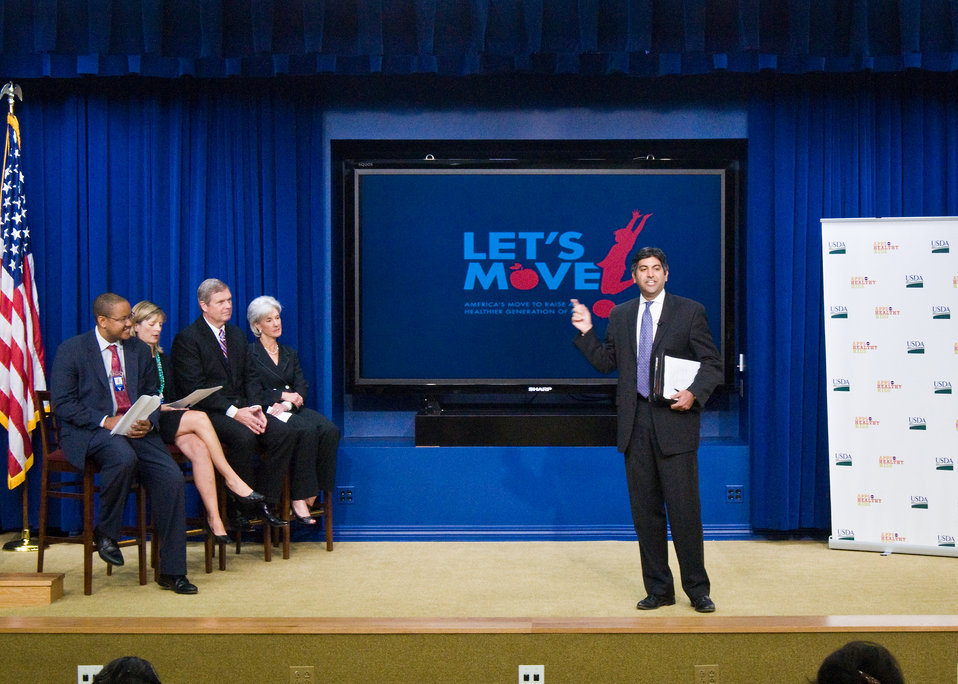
Agriculture Secretary Tom Vilsack and Health and Human Services Secretary Kathleen Sebelius listen as Aneesh Chopra, White House, Chief Technology Officer speaks of the importance of using information technology and social media to improve childhood nutrition as they honor the Winners of The Apps for Healthy Kids competition at the White House in Washington, DC, onWednesday, September 29, 2010. The Apps for Healthy Kids competition is part of First Lady Michelle Obama’s Let’s Move campaign to end childhood obesity within a generation. The competition challenges software developers, game designers, students and other innovators to develop fun and engaging software tools and games to urge children, especially “tweens” (children ages 9-12) – directly or through their parents – to eat better and be more physically active. The applications are software tools or games for the web, personal computer, mobile handheld device, console or any software platform available to the public. USDA Photo 10di1506-9 by Bob Nichols.